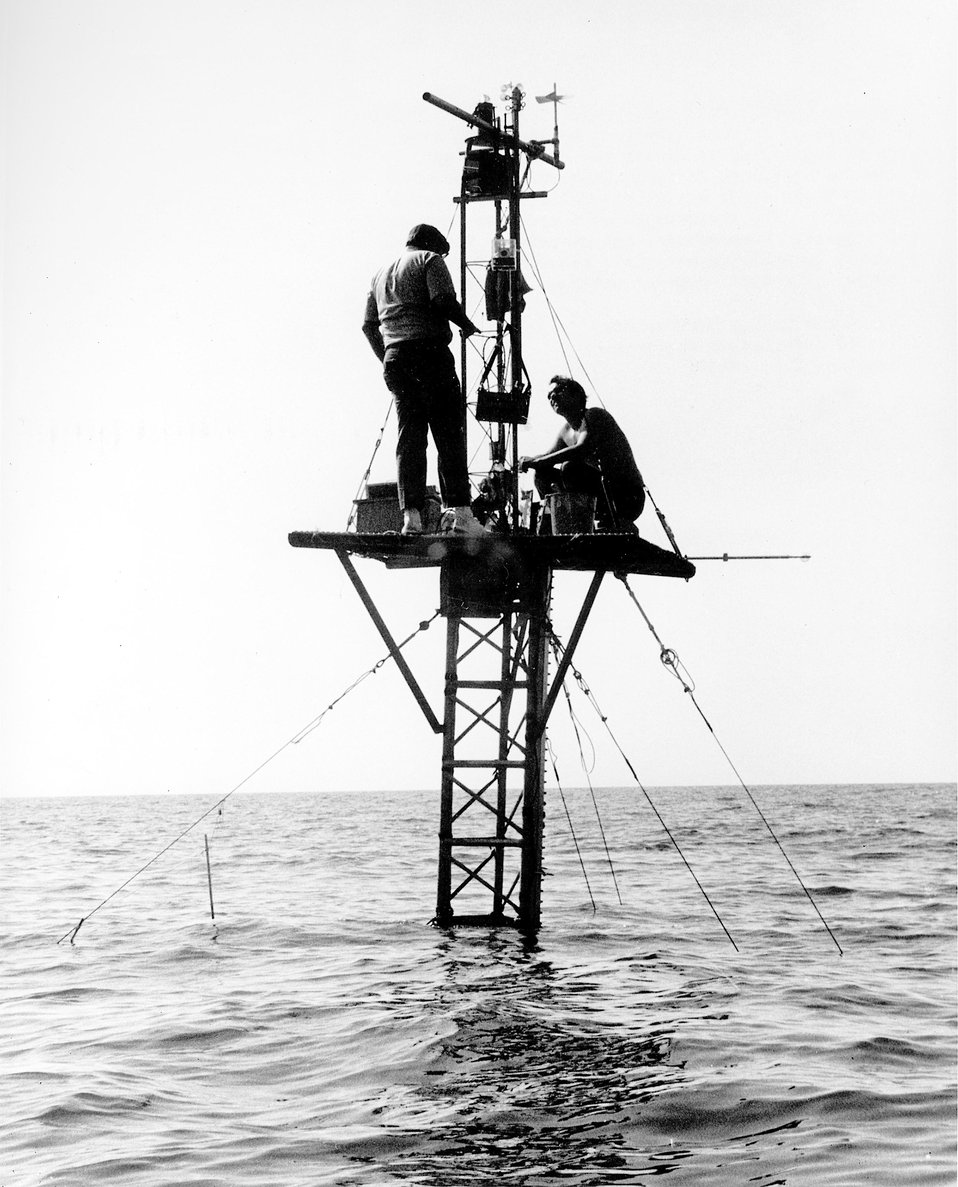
This instrument tower erected 2000 feet off-shore in Lake Michigan by the US Army Corps of Engineers is aiding the AEC's Argonne meteorologists in their study of the natural cooling process of the lake.